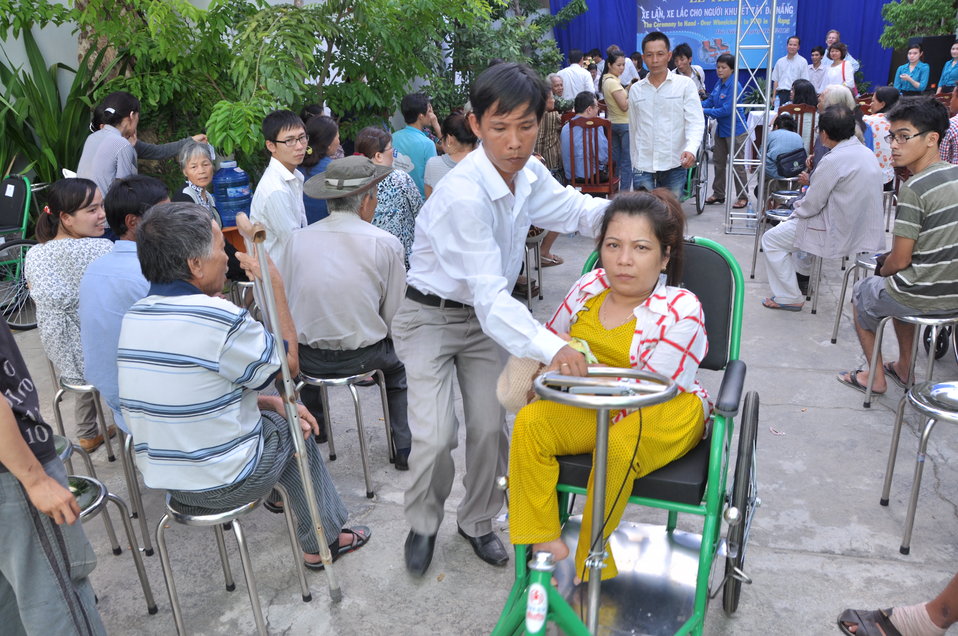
USAID Project Supports Rehabilitation Department for Children and Wheelchair Distribution in Danang

Beneficiaries in Danang, Vietnam, receive wheelchairs.